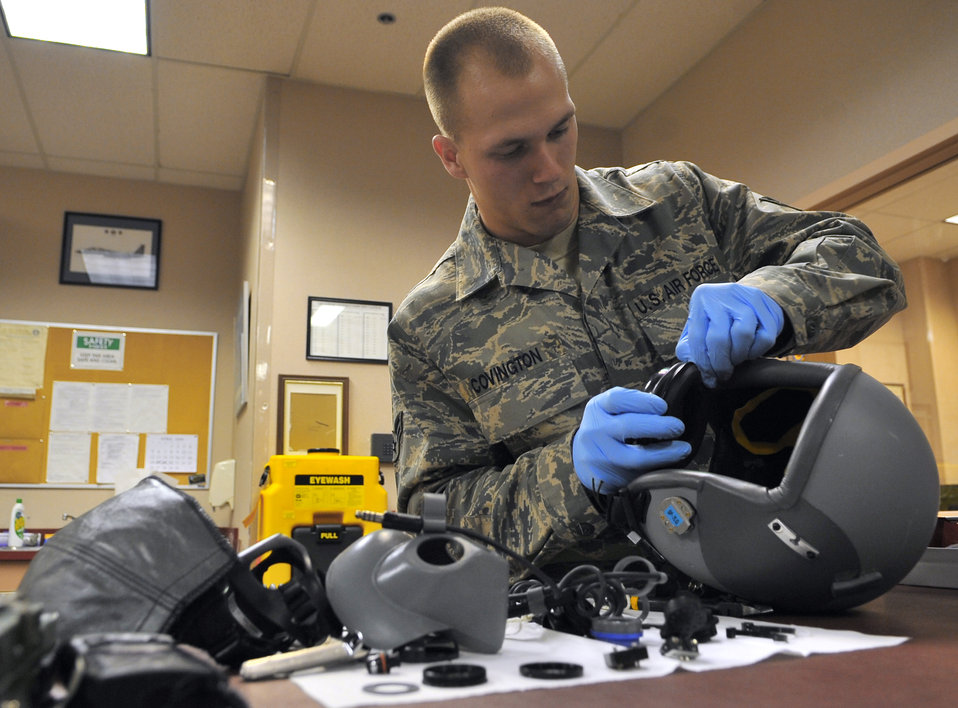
Team effort impacts Red Flag-Alaska

Airman 1st Class Carl Covington disassembles an oxygen mask and helmet for inspection during Red Flag-Alaska April 23 at Eielson Air Force Base, Alaska. Red Flag-Alaska is a Pacific Air Forces-directed field training exercise for U.S. and coalition forces flown under simulated air-combat conditions. Airman Covington is an aircrew flight equipment journeyman assigned to the 35th Operations Support Squadron from Misawa Air Base, Japan.